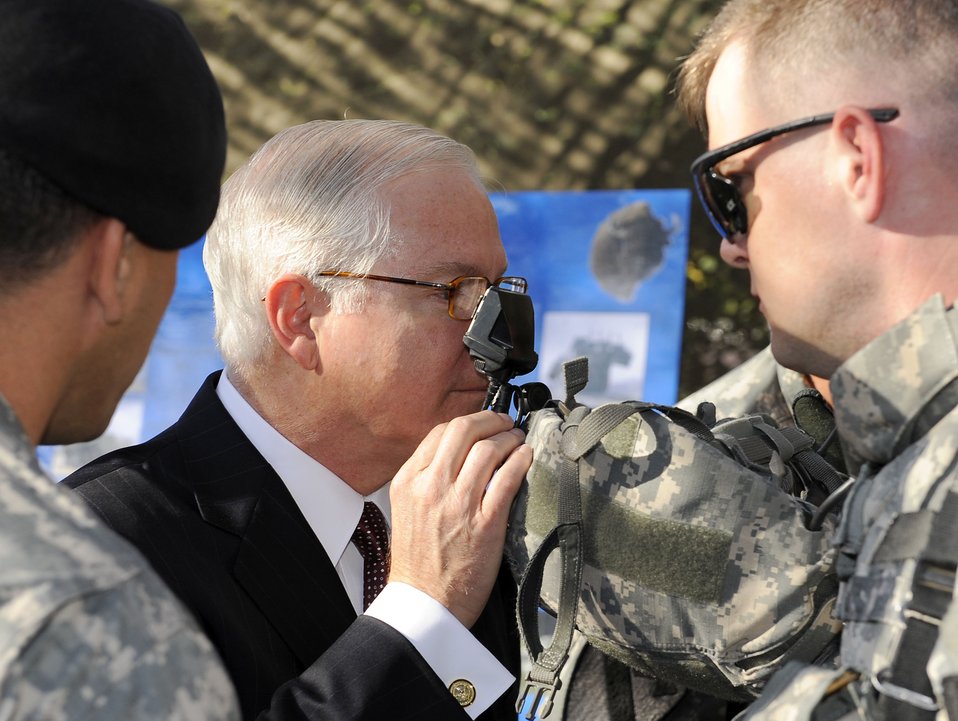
Secretary of Defense Robert M. Gates looks into Army Staff Sgt. James Young's helmet mounted display during a tour of the 5th Brigade, 2nd Infantry Division at Fort Lewis, Wash., July 8.